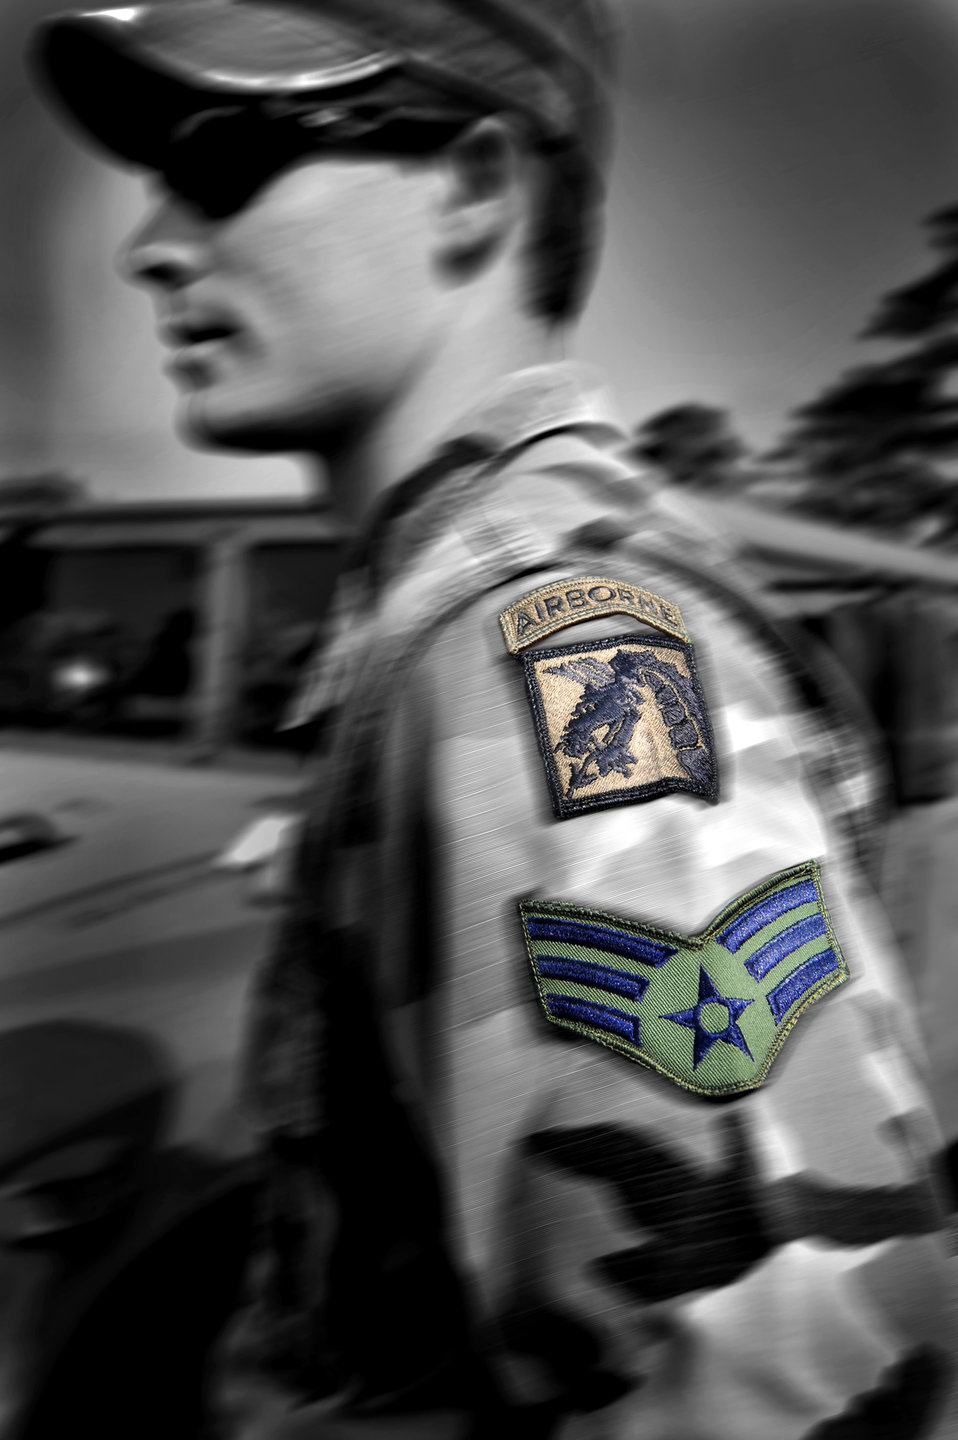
TACP: Joint effort puts bombs on target

Senior Airman Michael Munson is a joint terminal attack controller assigned to the 682nd Air Support Operations Squadron at Shaw Air Force Base, S.C. Airman Munson is a TACP member and has been through air assault, ranger, airborne and Marine hand-to-hand training schools. TACP Airmen are specialists who are assigned to combat units. They advise ground forces on aircraft employment and capabilities, coordinate and control aerospace operation, and participate in battle planning. Although their chain of command is through the Air Force, they primarily support the 18th Airborne Corps at Fort Bragg, N.C.